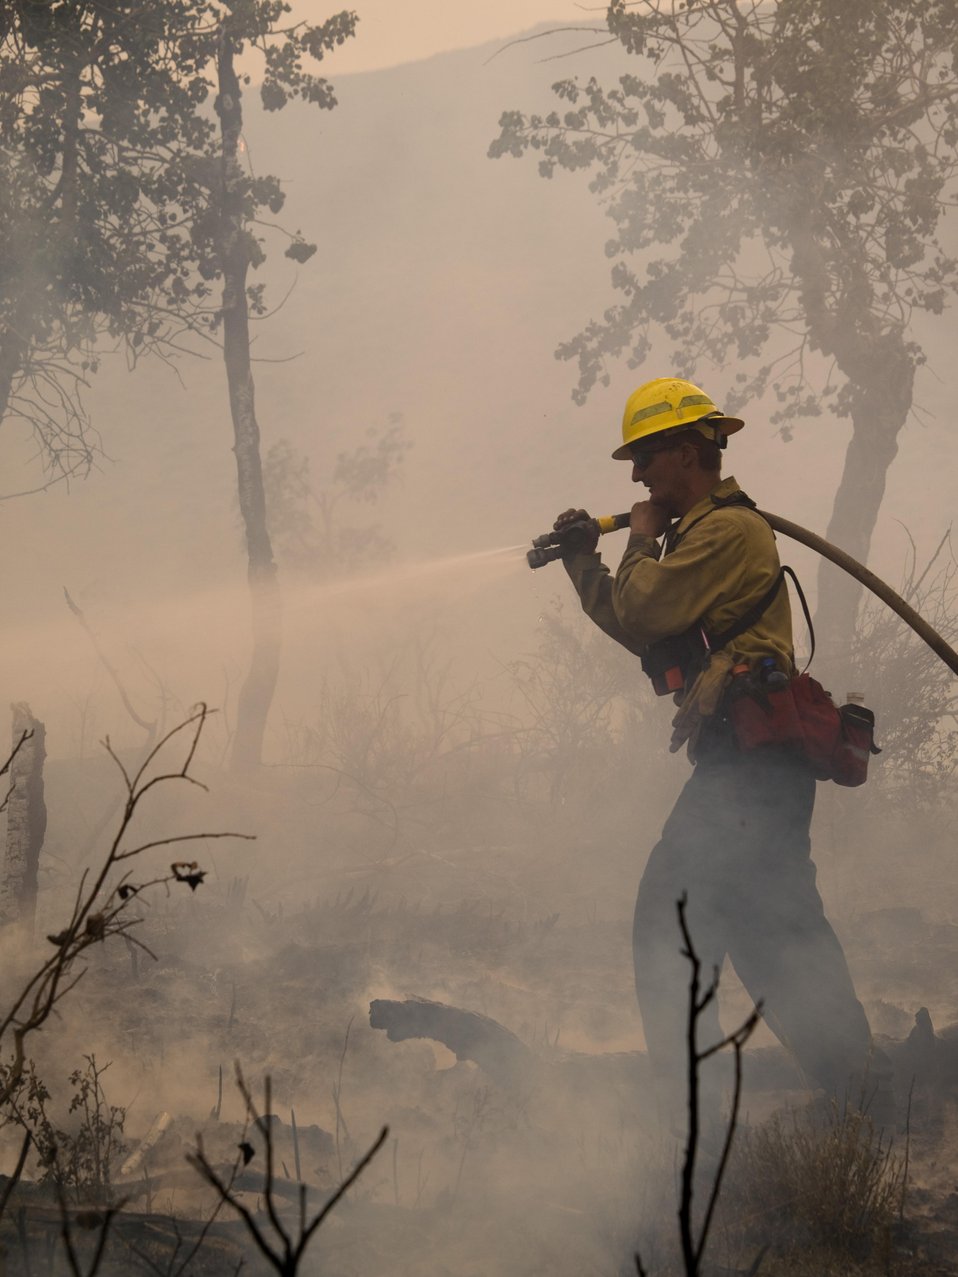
Firefighter works on the Lodgepole Fire. The Lodgepole Fire in the Salmon-Challis National Forest near Challis, ID began on Jul. 20, 2013 by lightning has consumed approximately 13,700 acres and is approximately 15% contained.